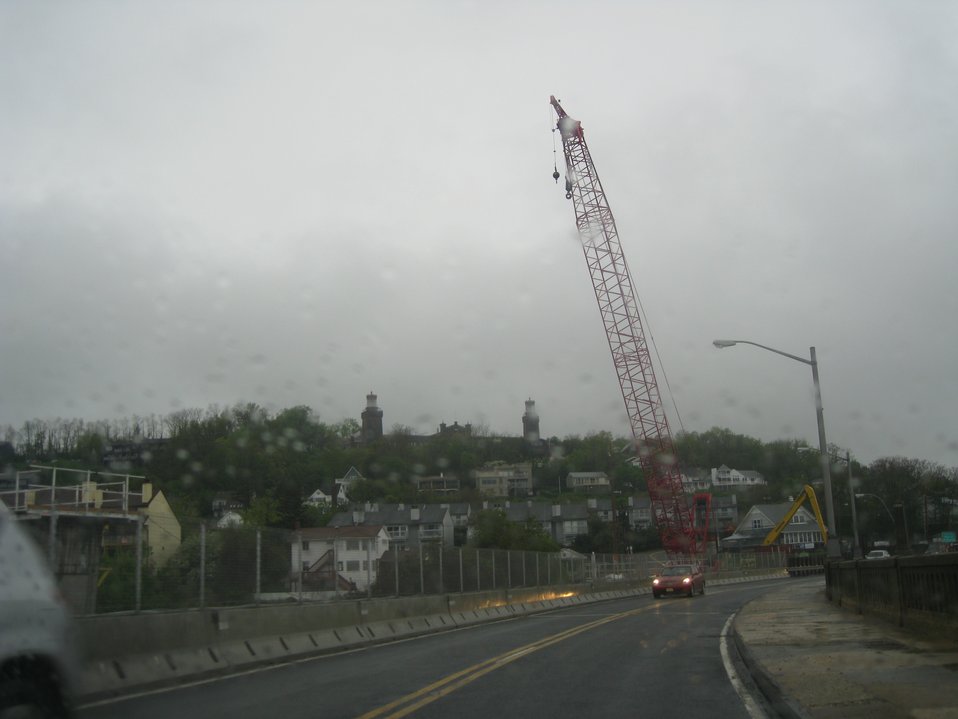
The twin lights of Navesink as seen from the road on a rainy day.